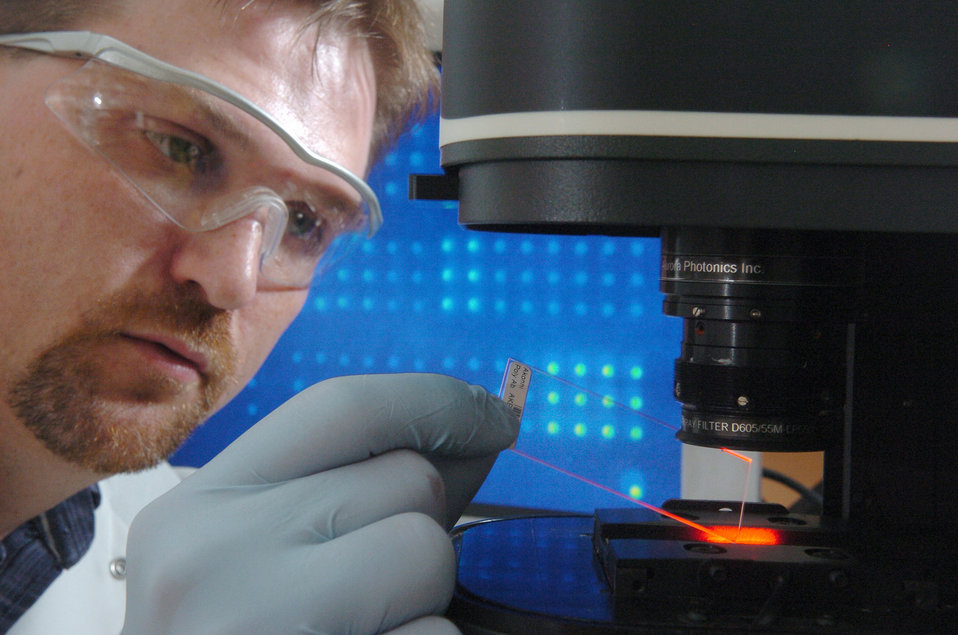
Argonne National Laboratory biologist Daniel Schabacker prepared to load biochip onto a scanner developed by one of Argonne's licenses, Aurora Photonics.

The biochip consists of a one-centimeter by one centimeter array that comprises anywhere between several dozen and several hundred dots or small drops. ANL has developed a chip that can save lives by diagnosing certain cancers even before patients become symptomatic. By using cancer patients' own auto-antibodies as a diagnostic tool, doctors could potentially tailor treatments based on their personal auto-antibody profile.